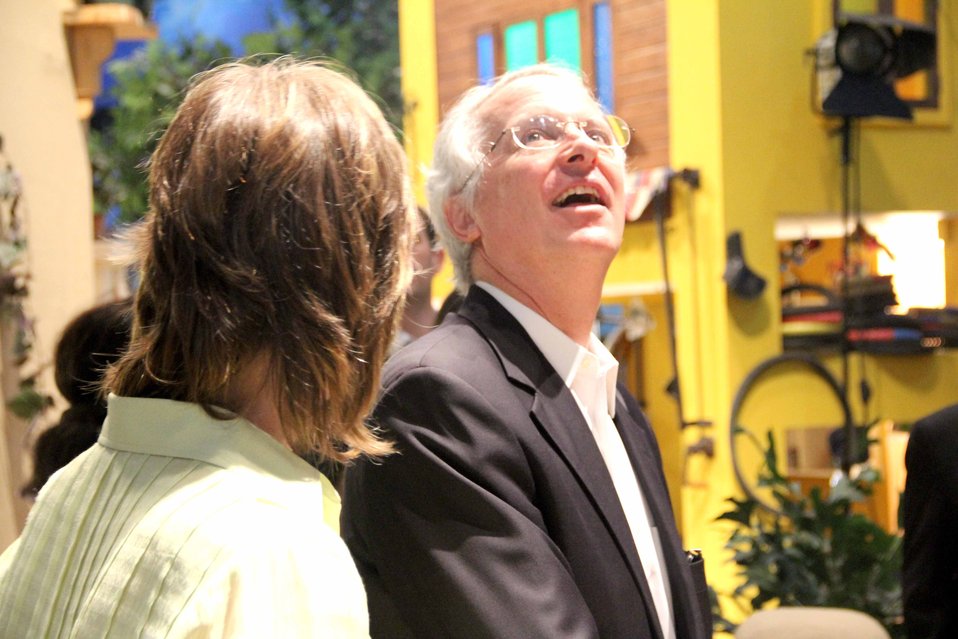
U.S. Ambassador’s Visit to Sim Sim Hamara Highlights U.S. Commitment to Improved Children’s Education in Pakistan at Lahore on 28 April, 2012